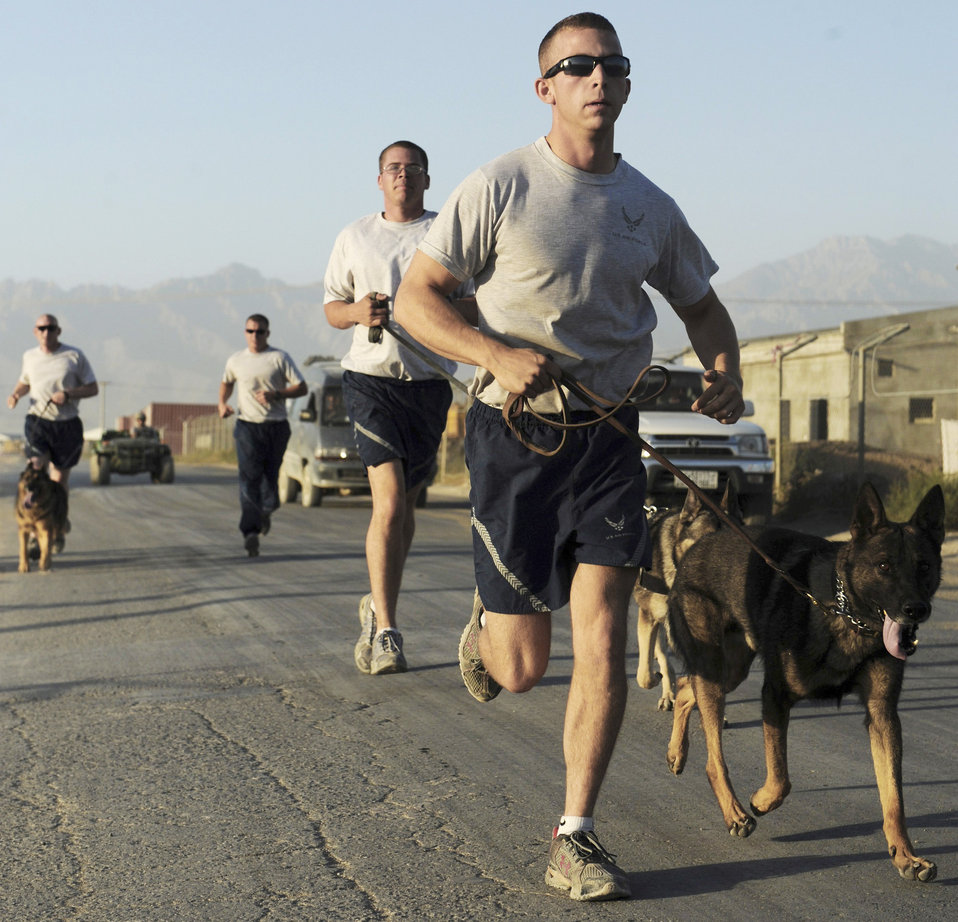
Dog handler team 'lose an Airman'

Staff Sgt. Chris Reynolds (from left to right), Tech. Sgt. Drew Odell, Staff Sgt. Justin Kitts and Staff Sgt. Scott Carpenter go on a training run Aug. 9 at Bagram Airfield, Afghanistan. The dog handlers are deployed to the 455th Expeditionary Security Forces Squadron. K-9 units patrol the base and inspect mail, luggage and vehicles.